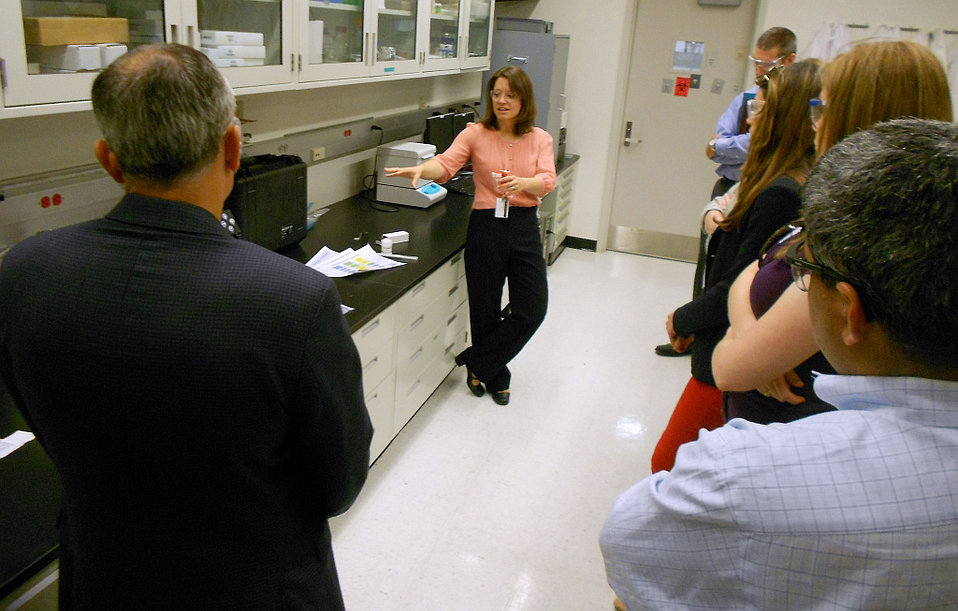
Congressional Staff Tour

Jayne Morrow (center) of the Biochemical Science Division in NIST’s Material Measurement Laboratory overviews best practices and toolkits for biothreat sample collection to a tour of congressional staff members of the Homeland Security Dialogue Forum.